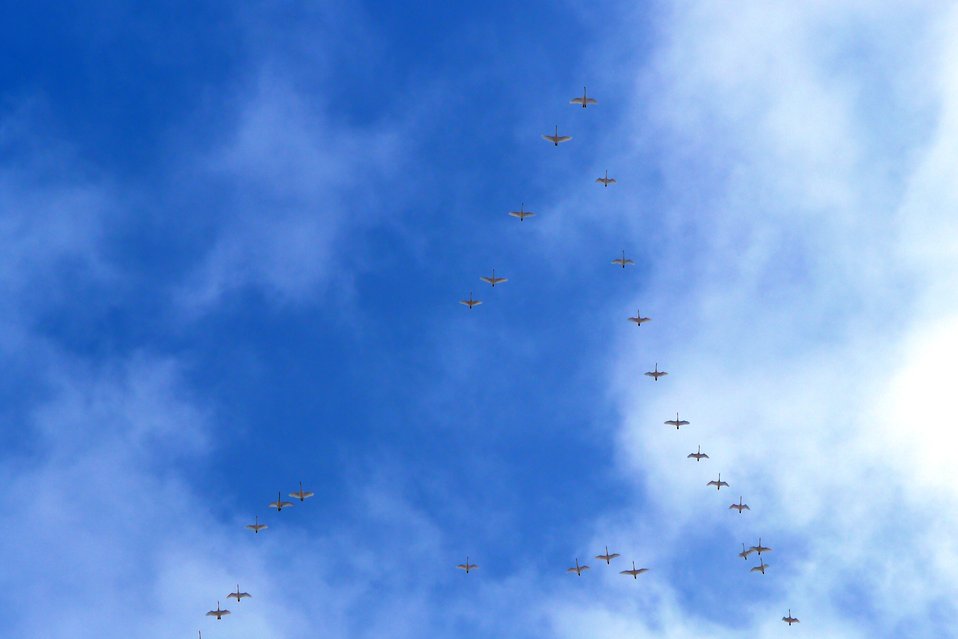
migrating tundra swans

Red Rock Lakes National Wildlife Refuge, MT